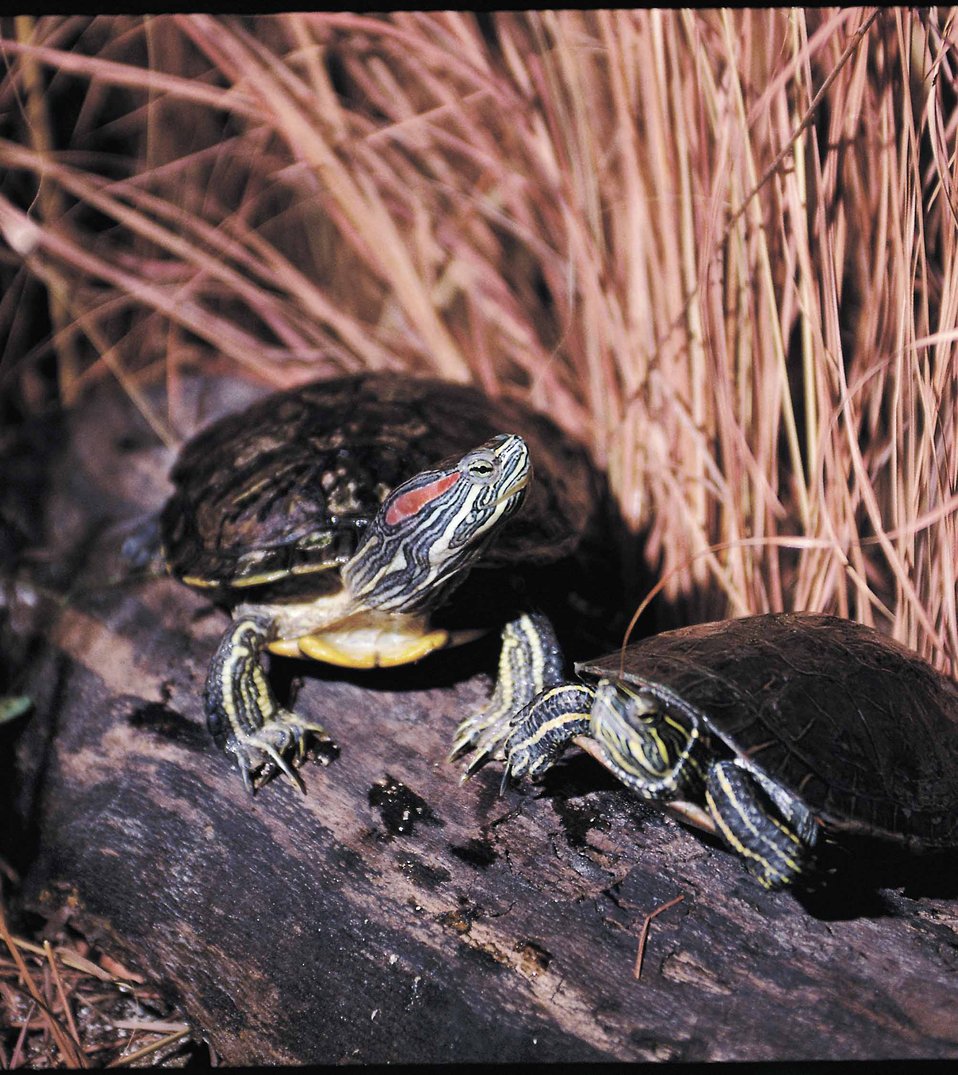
Red-eared turtles in a wetland.